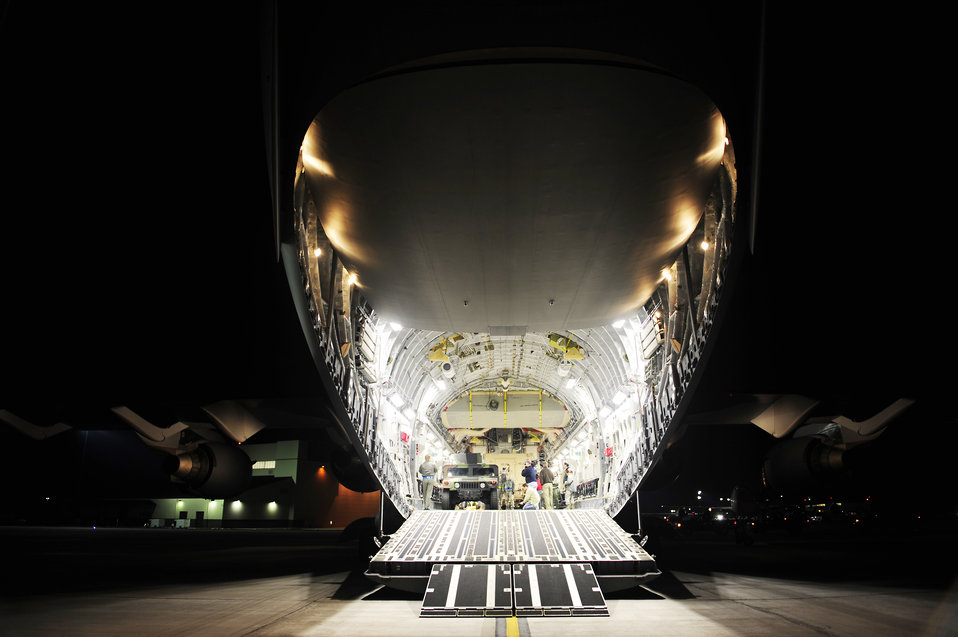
Haiti Relief Operations

Airmen load cargo onto a C-17 Globemaster III Jan. 14, 2010 at Joint Base McGuire-Dix-Lakehurst, N.J., supporting relief efforts to Haiti. The Airmen are assigned to the 621st Contingency Response Wing at JB McGuire.